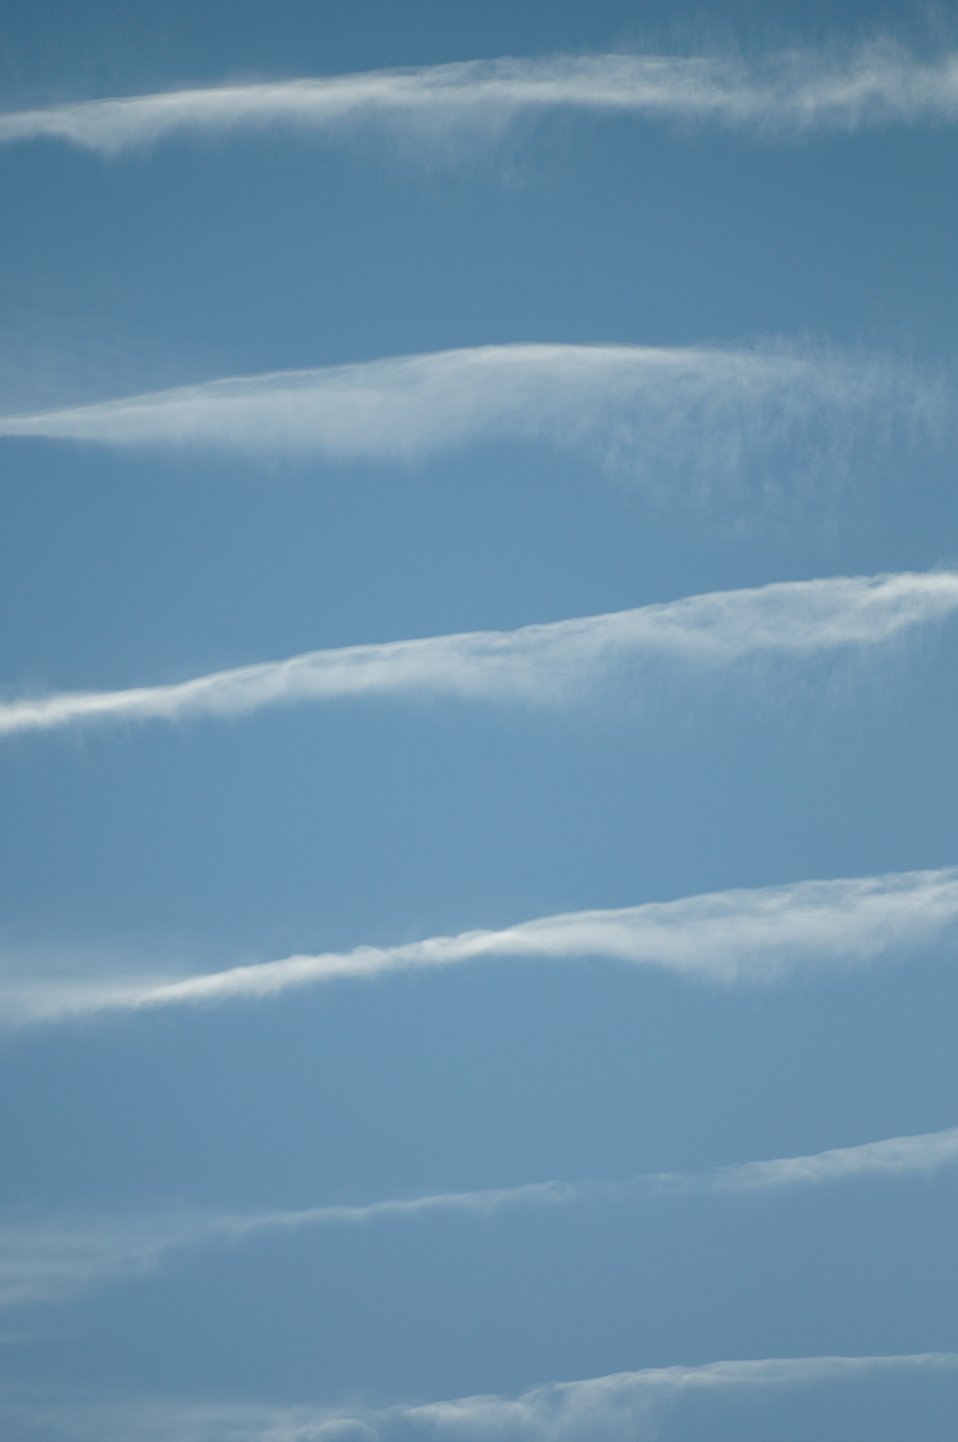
Gravity wave clouds forming over the Front Range of the Rocky Mountains.